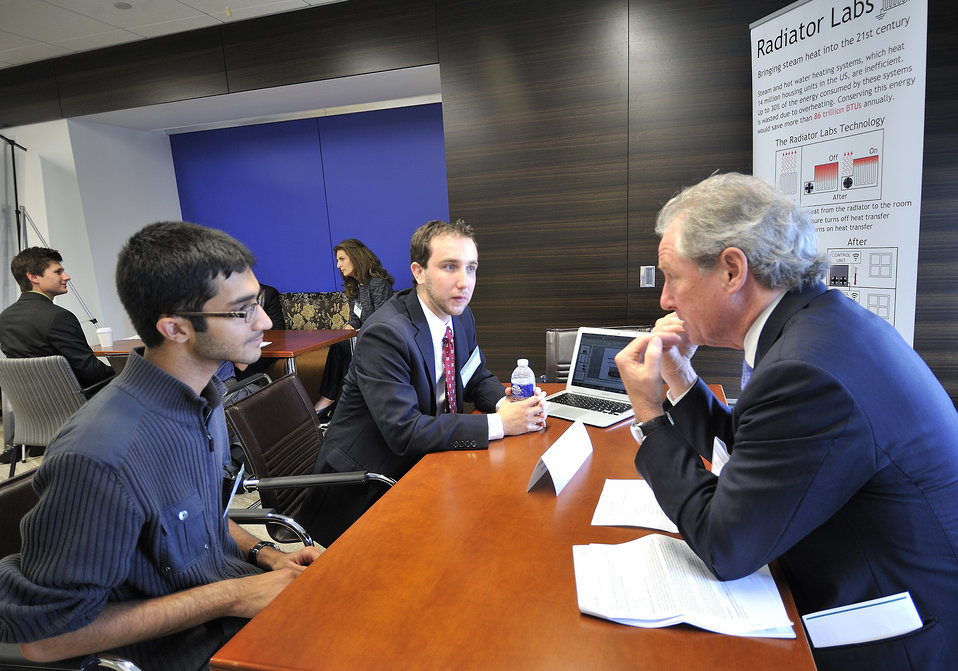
National Clean Energy Business Plan Competition

The National Clean Energy Business Plan Competition inspired nearly 300 university teams across the country to create new businesses to commercialize promising energy technologies developed at U.S. universities and the National Laboratories.